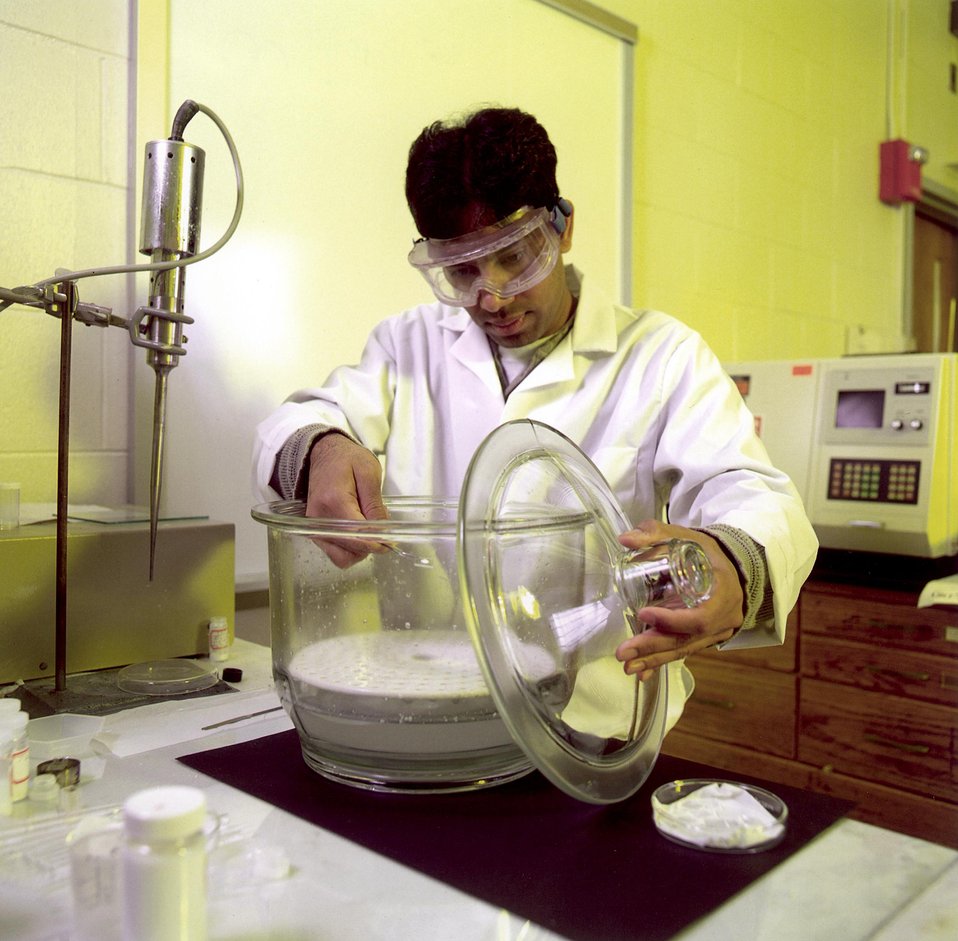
GRADUATE STUDENT PLACES THE COLLOIDAL CRYSTAL SAMPLES IN A HUMIDITY CHAMBER AT AMES LAB TO DRY FOR 24 HOURS.

THE PROCESS OF FABRICATING PHOTONIC CRYSTALS BEGINS WITH SPREADING A FEW DROPS OF A SLURRY OF TITANIA SUSPENSION AND POLYSTYRENE SPHERES ON A GLASS SUBSTRATE. THE SAMPLE SPENDS 24 HOURS DRYING IN HUMIDITY CHAMBER AND IS THEN TAKEN TO BE COMPRESSED. FIVE MINUTES OF COMPRESSION HELPS THIN THE SAMPLE AND REDUCES STRESS CRACKS IN THE HEAT TREATMENT PROCESS THAT FOLLOWS. SLOW BAKING IS THE FINAL STEP.